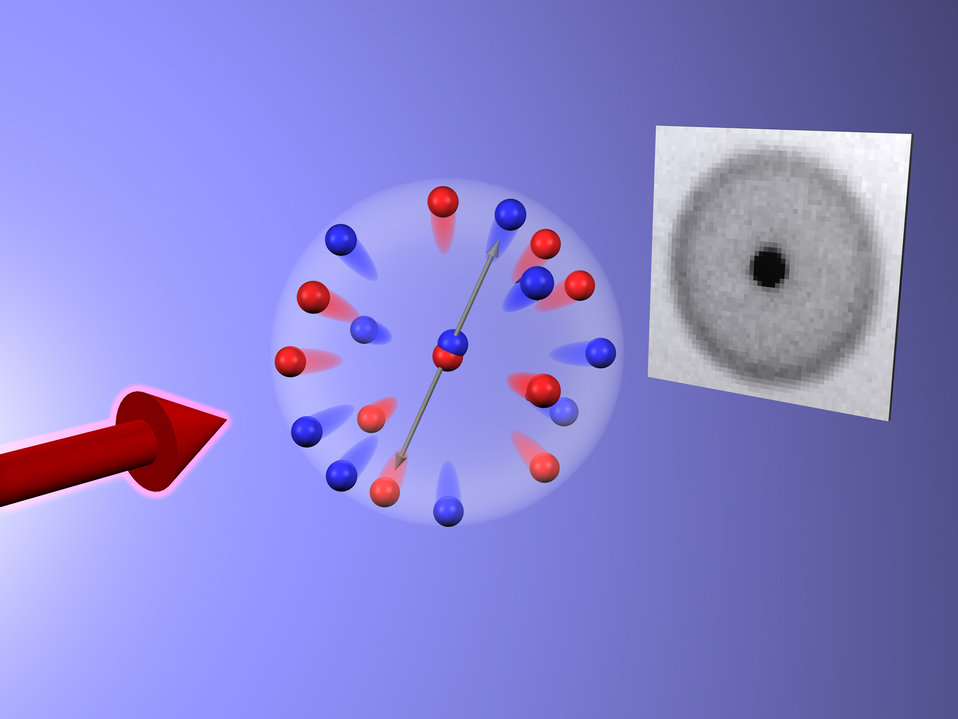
Quantum Physics; Paired Atoms; Untrapped Atom Pairs

Ultracold molecules (center) are split into entangled pairs of atoms flying apart in opposite directions. A laser beam (left) is used to create shadow images of the cloud (right). The pairs of entangled atoms can then be found by carefully studying the noise pattern in these pictures.